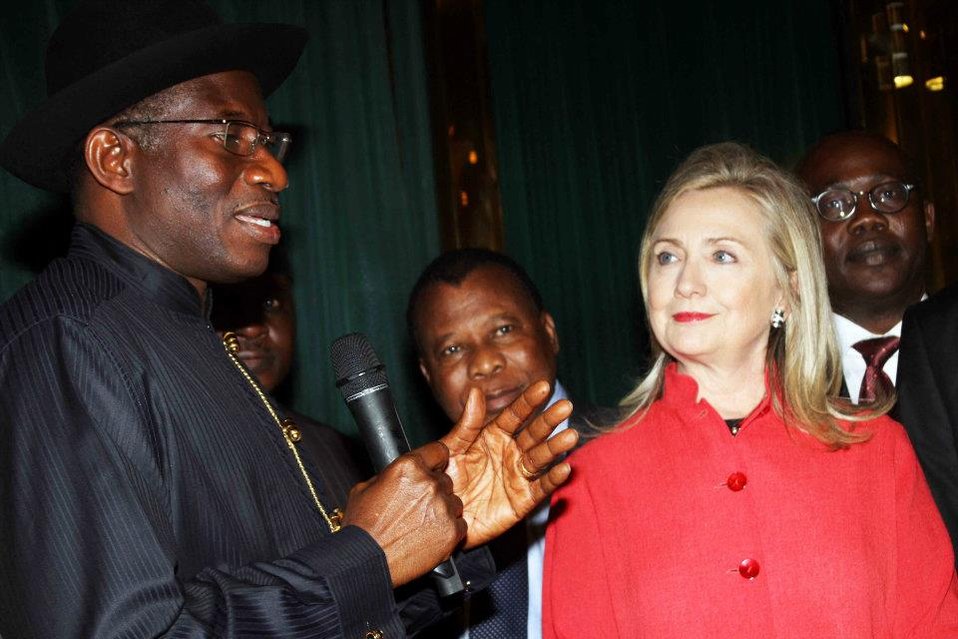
Secretary Clinton Meets With Nigerian President Goodluck Jonathan

U.S. Secretary of State Hillary Rodham Clinton meets with Nigerian President Goodluck Jonathan at the Presidential Villa in Abuja, Nigeria, on August 9, 2012.